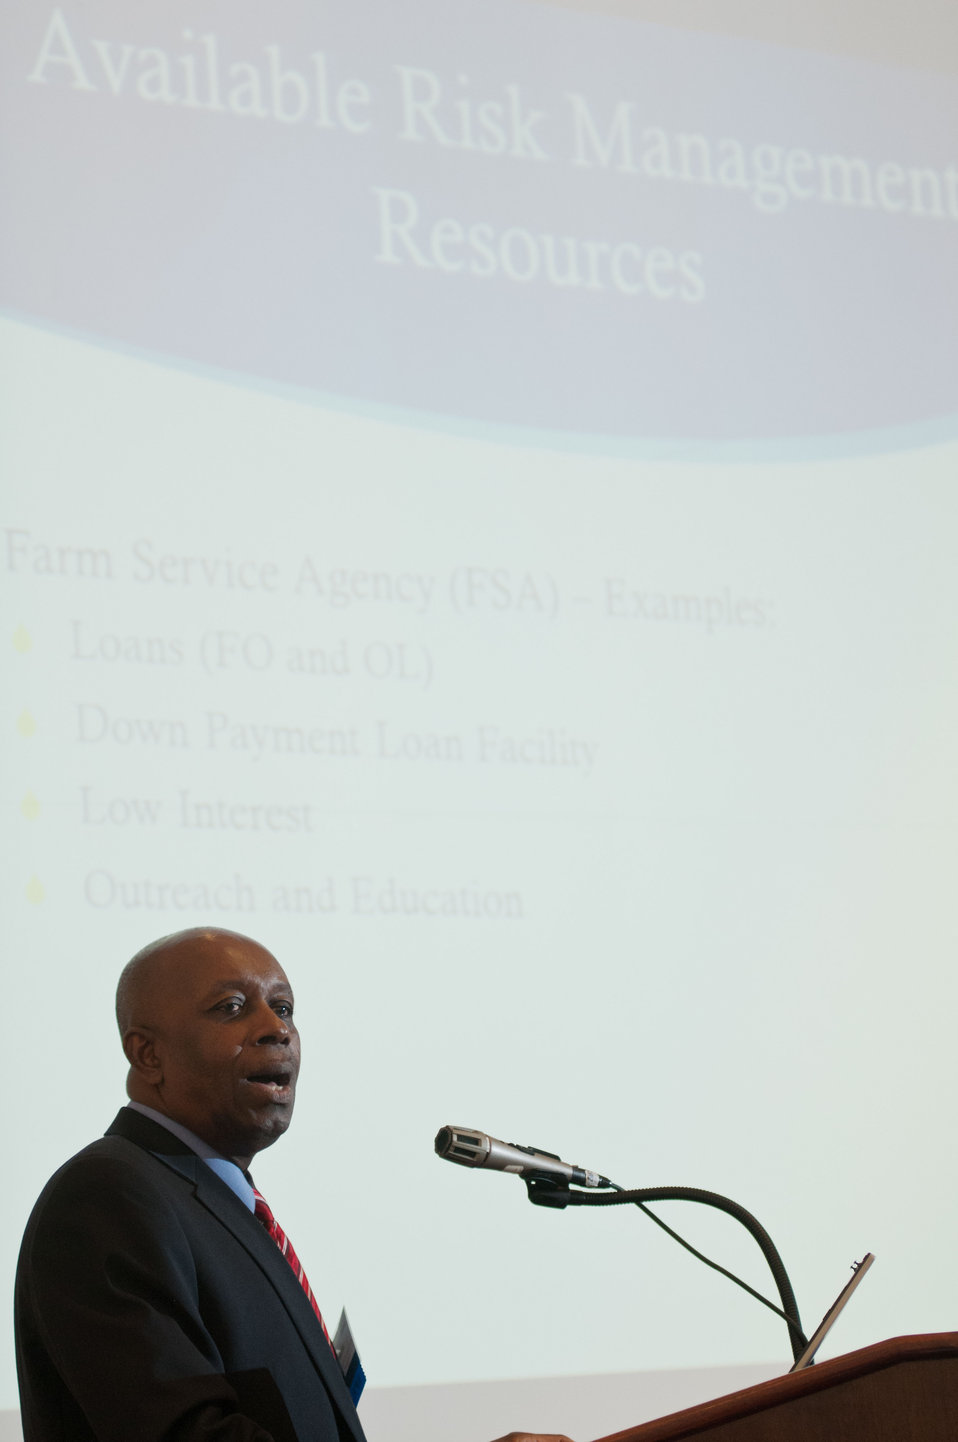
Delaware State University, College of Agriculture & Related Sciences Associate Dean Albert E. Essel, from Dover, DE, speaks on Resources Available to the Small and Disadvantaged Farmer during the U.S. Department of Agriculture (USDA) 2013 Agricultural Outlook Forum held at the Crystal Gateway Marriott Hotel in Arlington, VA on Friday, Feb. 22, 2013. The breakout session’s general topic is Risk Management for Small and Socially Disadvantaged Farmers a profile of small and disadvantaged farmers based on the recent Census of Agriculture to identify the size and current economic and demographic trends of these farmers. The discussion also identified risks for these farmers, the need to manage those risks for longer-term viability/sustainability, the role of the public sector, and the resources available for small and disadvantaged farmers in coping with risk. USDA photo by Lance Cheung.
The presentation is available at www.usda.gov/oce/forum/presentations/Essel.pptx.